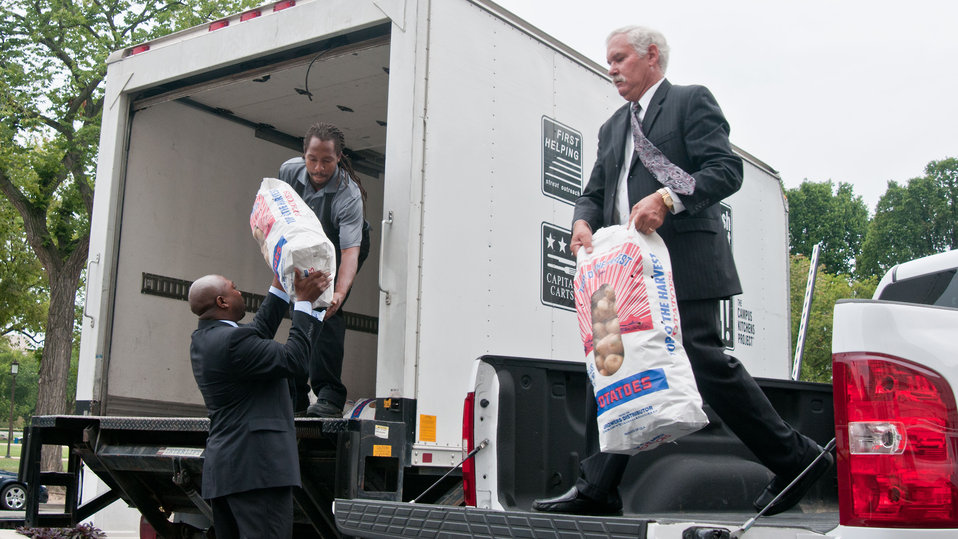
Donation complete, Agriculture Under Secretary Farm and Foreign Agriculture Service (FFAS) Michael Scuse (right) donated 1,000 pounds of potatoes to DC Central Kitchen, in participation with the Feds Feed Families Food Drive, on Monday August 20, 2012 in front of the Agriculture headquarters in Washington, D.C. FFAS Deputy Under Secretary Karis Gutter (center) transfer the 20 50-pound bags from nearby pick-up to cargo truck. Under Secretary Scuse, a farmer himself purchased and loaded his pick-up this weekend with half a ton of potatoes at nearby Wicks farm, in Delaware. Secretary Scuse farms 1,700 acres of corn, soybeans and wheat. He says that this is the first of many more donations this year. DC Central Kitchen Fleet Coordinator/Transportation Driver Anthony Turner (left) received the spuds in one of the kitchen’s trucks. When asked when the potatoes will get to people’s mouths, he replied, “Couple hours. Once I get it to the kitchen, they have volunteers there, we work off volunteers, (and) if it wasn’t for the volunteers we would not run. Once I get it back, the volunteers will cut it up, shave them, dice or whatever they are going to do, they are going to put it into soup, or something; they (the recipients) will get it by tonight.”